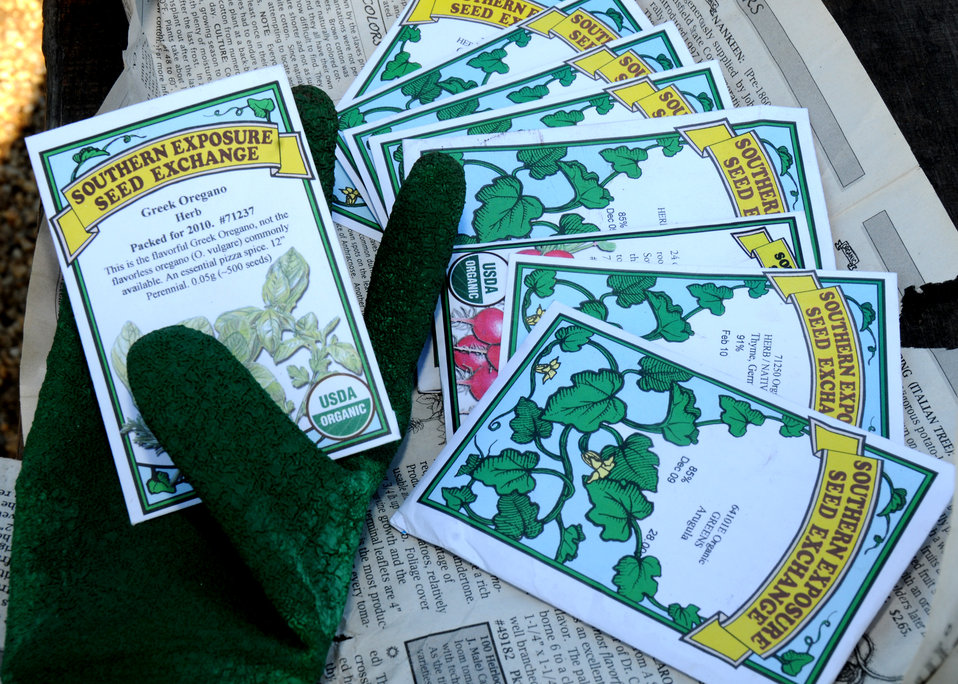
U.S. Department of Agriculture (USDA) organic seeds are used for planting the raised beds of USDA’s People’s Garden on Friday, Apr. 9, 2010. USDA photo 10di1300-47